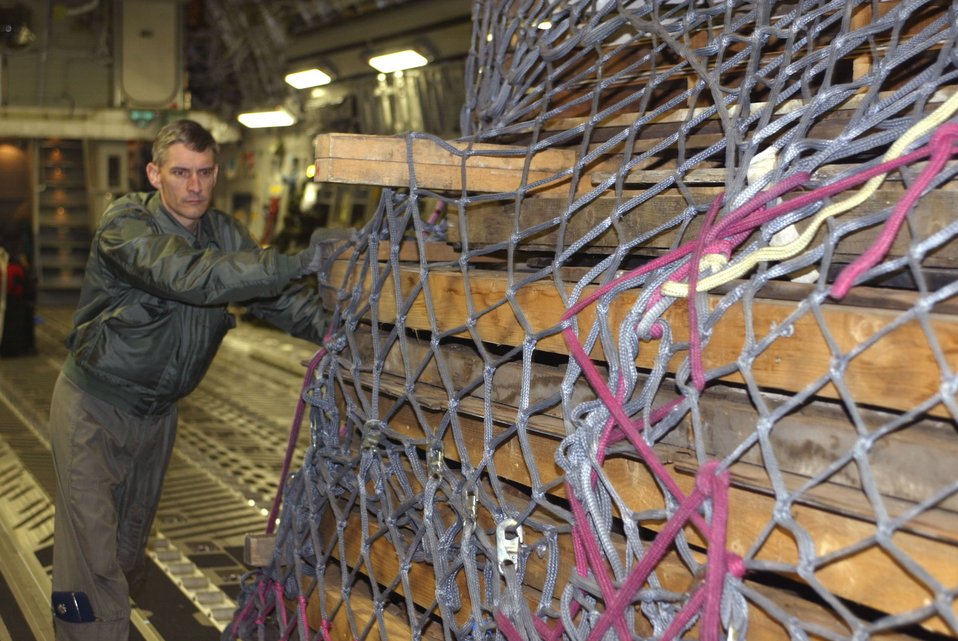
Air Force makes a stable move

DOBBINS AIR RESERVE BASE, Ga. -- Lt Col William Hill helps offload one of the pallets containing the last remaining war stable from a C-17 Globemaster III here. The stable was the D-Day home for the 506th Parachute Infantry Regiment, known as the Band of Brothers. Originally located on a farm in south England, it was disassembled, palletized and transported to the United States on an Air National Guard C-17 from the 172nd Airlift Wing at Allen C. Thompson Field, Miss. The stable will be transported to Camp Toccoa, Ga., where it will reassembled at a museum there. Colonel Hill is the operations group commander for the 172nd AW.